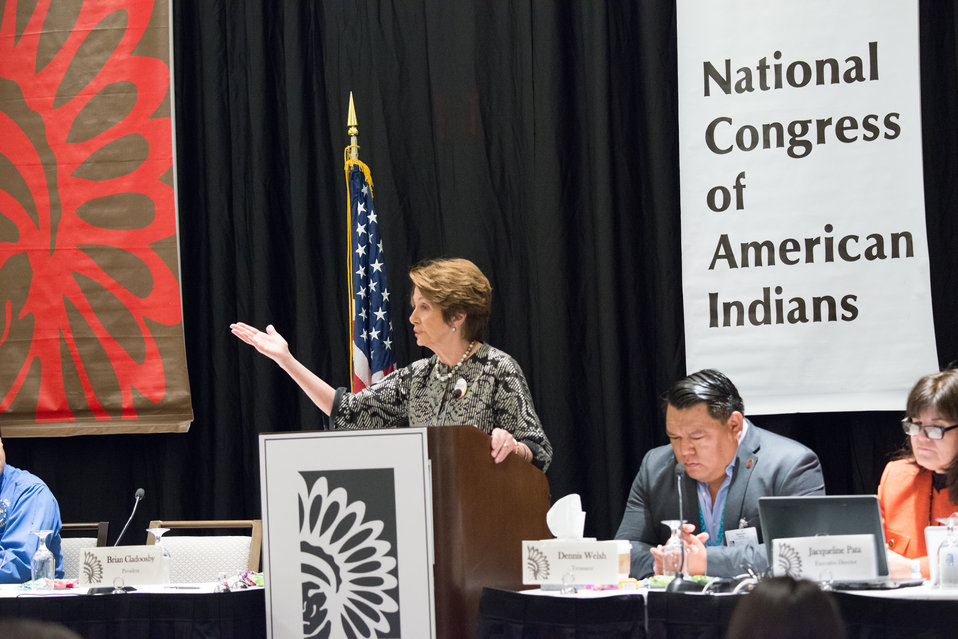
Congresswoman (CA) Nancy Pelosi addresses the 2014 National Congress of American Indians (NCAI) Executive Council Winter Session at the Westin Washington City Center in Washington, D.C. on Thursday, Mar. 13, 2014.